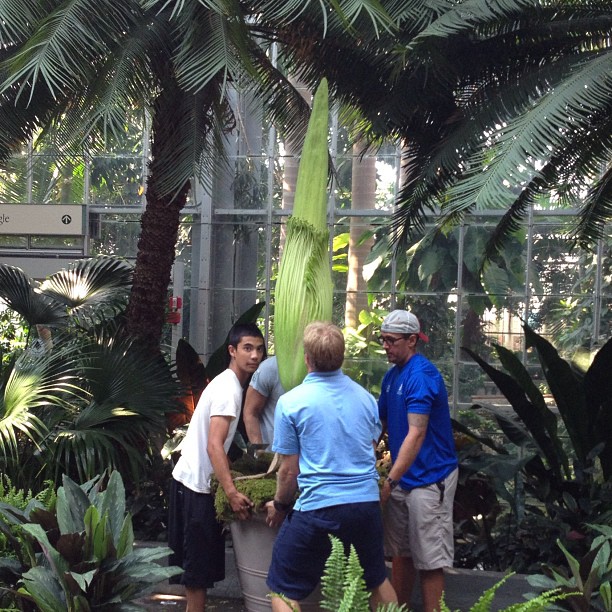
Bloom watch: rotating 'corpse flower' now 79' tall, 62' on Sat. #stinkyplant